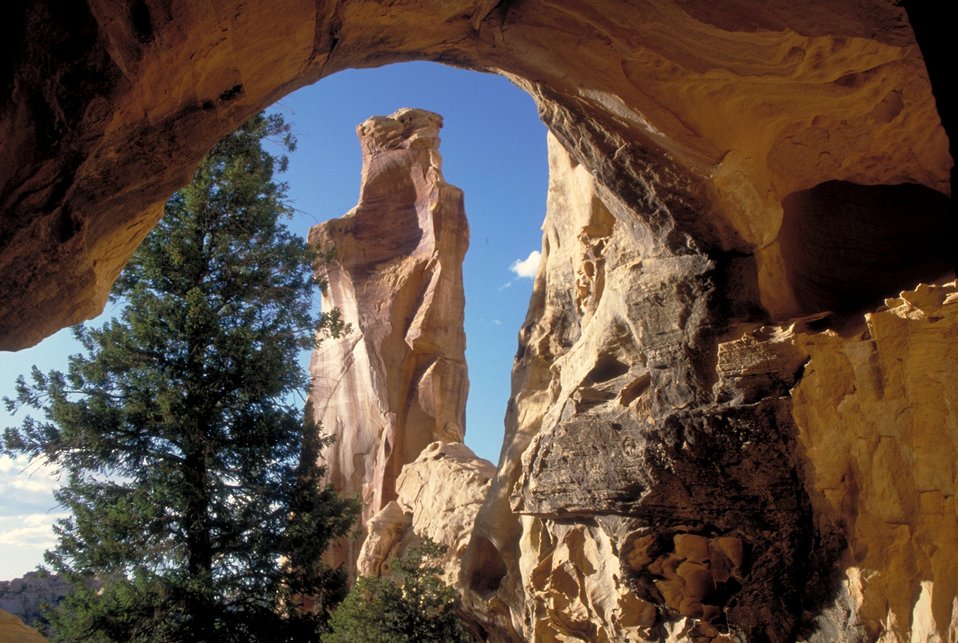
Broken Cross (formation) in the San Rafael Swell.